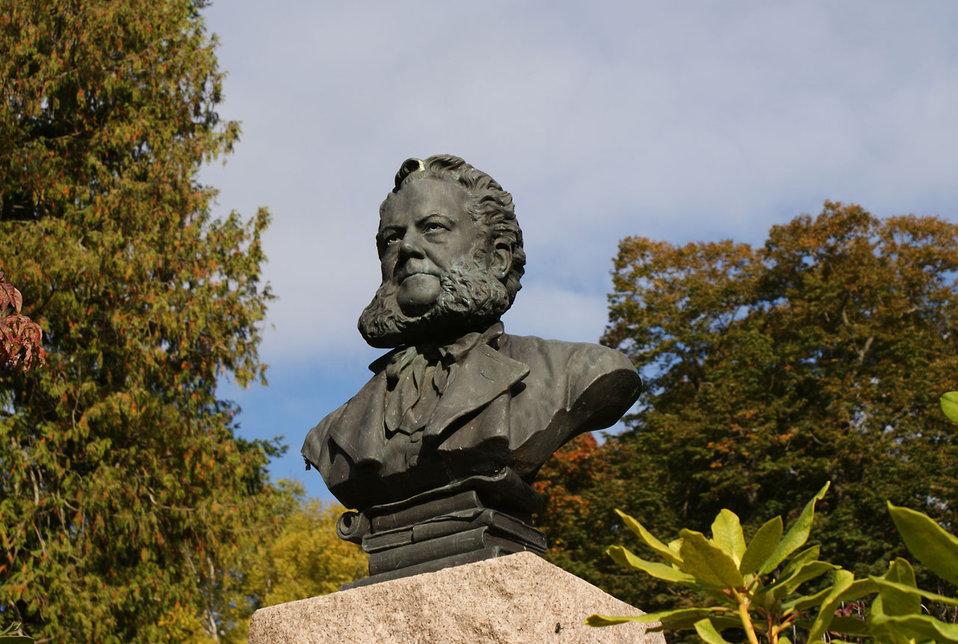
Henrik ibsen

World renowned playwright and poet..